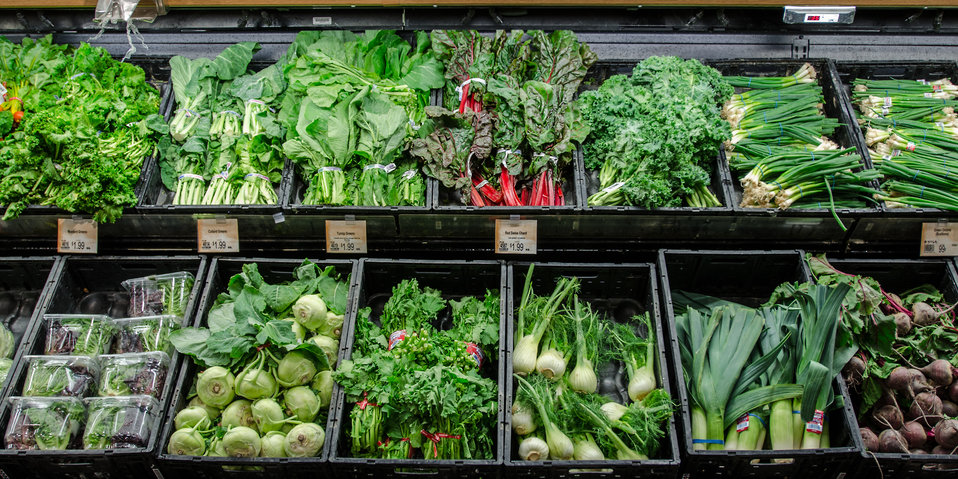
Leafy green produce at a grocery store in Fairfax, Virginia, on March 3, 2011.